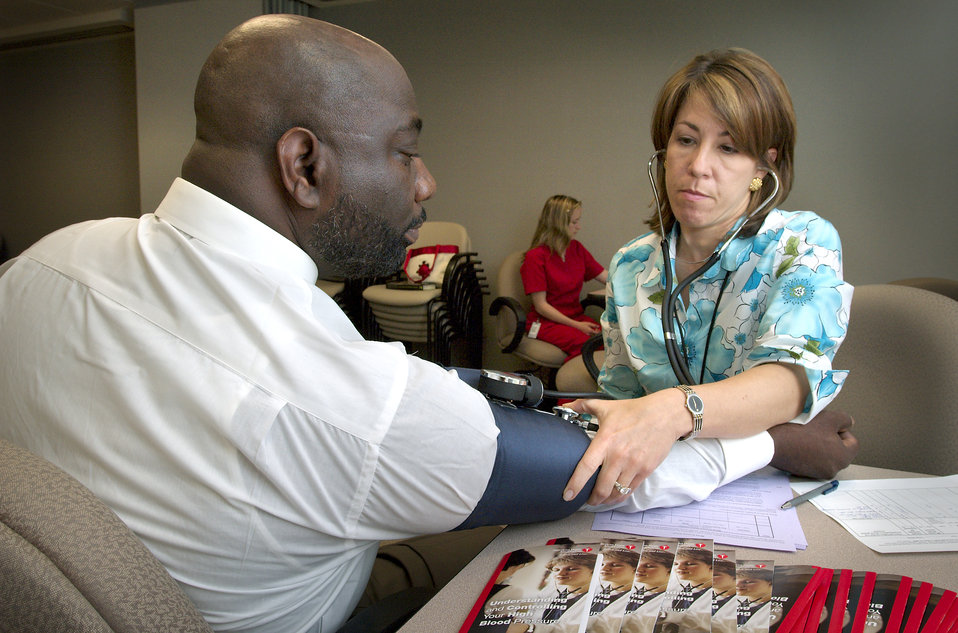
Here, CDC employee, Terry Giles (left), was shown having his blood pressure read by Robyn Morgan, of the National Center for Chronic Disease Prevention and Health Promotion (NCCDPHP), during a 2005 CDC blood pressure screening event. Campuses included were Century Center, Chamblee, Corporate Square, Executive Park, Koger, and Roybal, and was provided by the Office of Women's Health (OWH), Office of Health and Safety (OHS), NCCDPHP's Cardiovascular Health Branch (CVH), as well as volunteers from various other centers, institutes, and offices (CIOs). This annual event was held in observance of National High Blood Pressure Education Month, National Nurses Week, and National Women's Health Week.High blood pressure (HBP), or hypertension, is known as a 'silent killer' for people who have HBP often do not experience symptoms, but are at greater risk for heart disease and stroke, which are leading causes of death in both women and men.